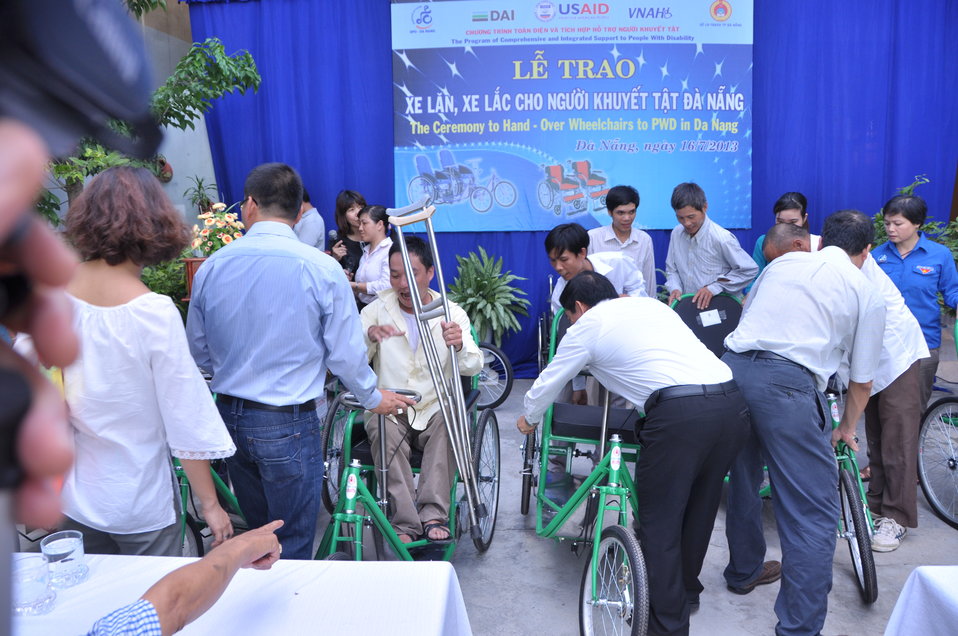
USAID Project Supports Rehabilitation Department for Children and Wheelchair Distribution in Danang

Beneficiaries in Danang, Vietnam, receive wheelchairs.